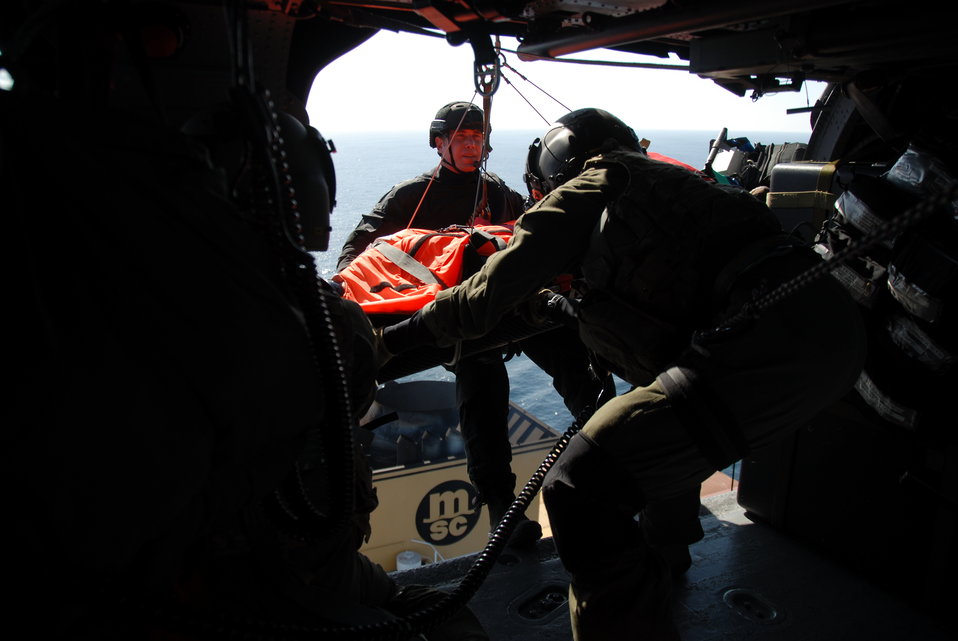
Guardsmen rescue

Tech. Sgt. Sean Pellaton guides Staff Sgt. Adam Vanhaaster and his patient into a HH-60G Pave Hawk rescue helicopter Feb. 4, 2012, 200 miles of the coast of California. When a 54-year-old male suffered stroke-like symptoms aboard the cargo ship MSC Beijing, Guardsmen with the 129th Rescue Wing provided medical assistance and airlifted the patient to the San Jose Regional Medical Center in San Jose, Calif. Pellaton is an aerial gunner assigned to the 129th Rescue Squadron and Vanhaaster is a pararescueman assigned to the 131st Rescue Squadron. Both squadrons and the wing are at Moffett Federal Airfield, Calif.